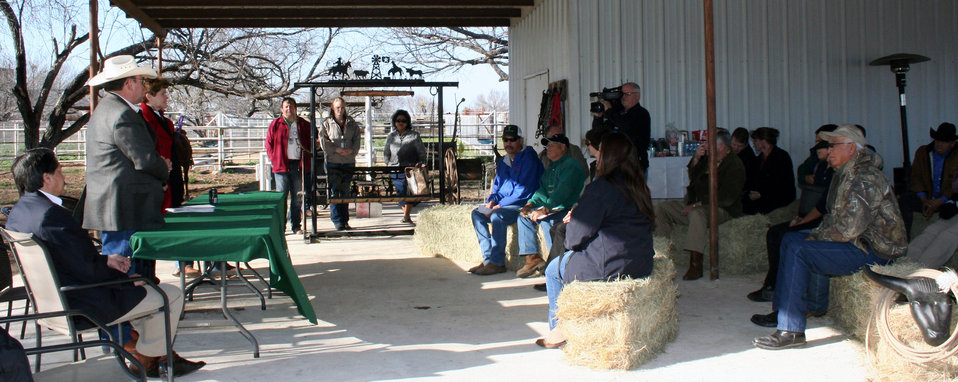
U.S. Department of Agriculture (USDA) Texas agency leaders, including Rural Development (RD) Daniel Torres, Texas State Conservationist, Natural Resources Conservation Service (NRCS) Salvador Salinas, and Texas State Executive Director Judith Canales, join Agriculture Deputy Secretary Krysta Harden as they visit with South Texas farmers and ranchers about Strikeforce at Miguel Ruiz’s ranch in Lytle, TX on Thursday, Feb. 27, 2014.